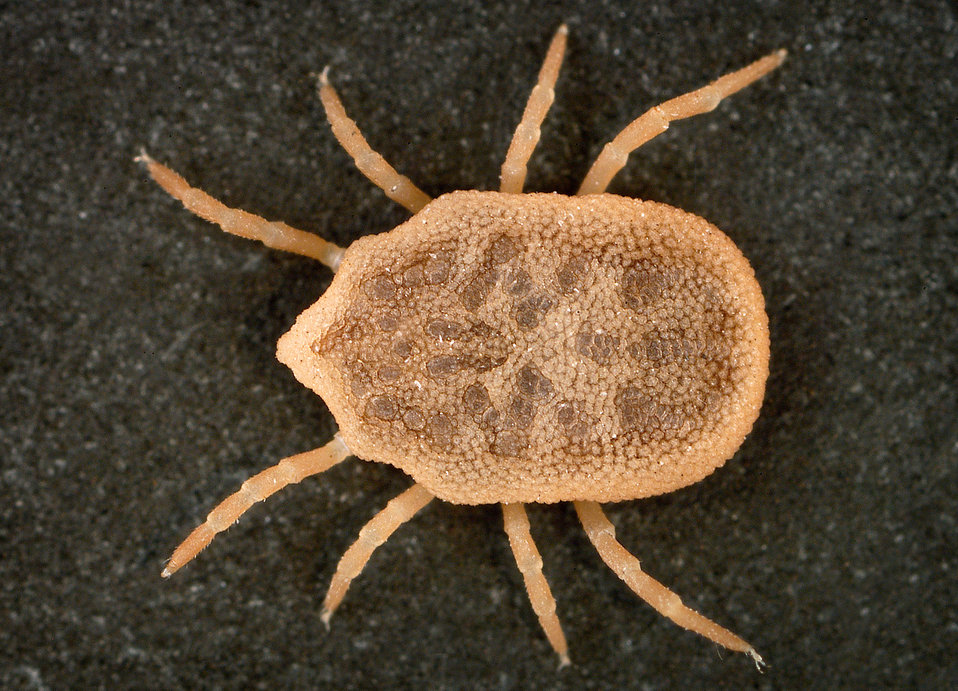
This is a dorsal view of the 'soft tick' Carios kelleyi, formerly Ornithodoros kelleyi, or the 'Bat Tick'.